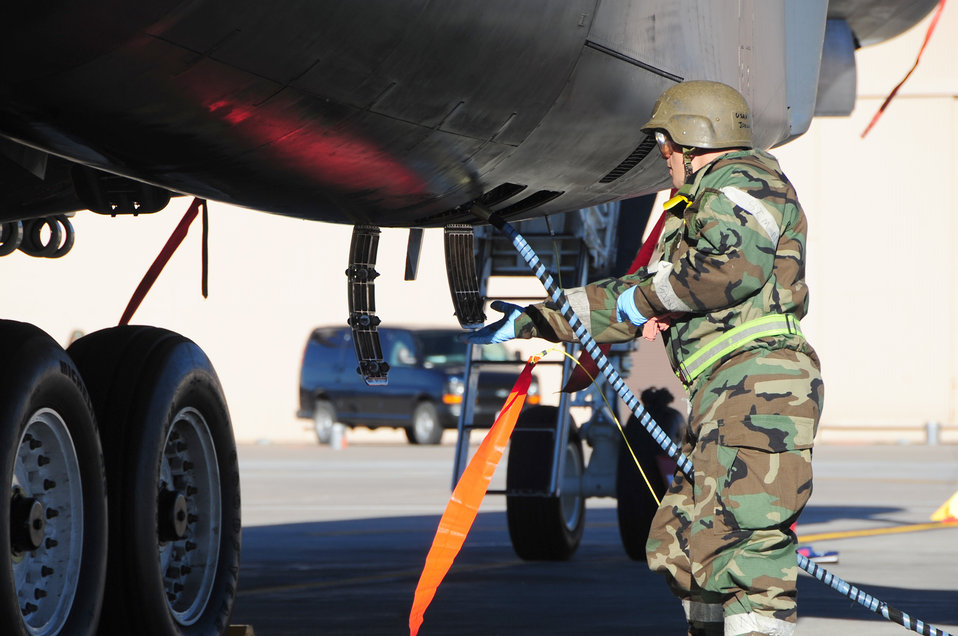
Phase II Operational Readiness Inspection

Senior Airman Jason Whitmore services the accessory drive gear box on a B-1B Lancer during a Phase II Operational Readiness Inspection Oct. 15, 2010, at Ellsworth Air Force Base, S.D. Airman Whitmore is an electronic warfare technician assigned to the 28th Aircraft Maintenance Squadron.